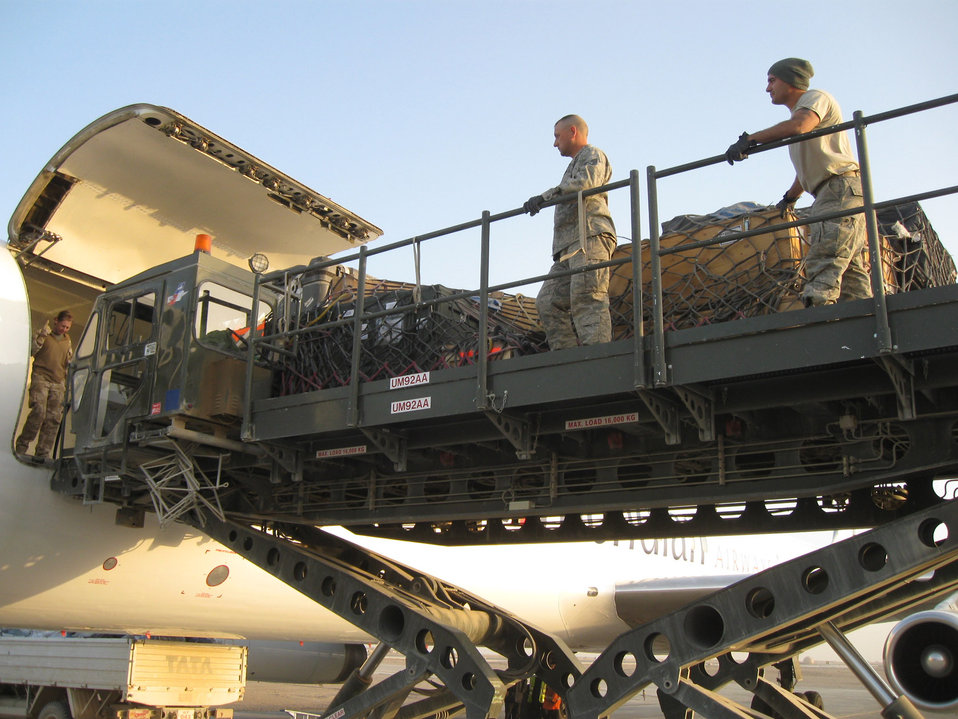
Airmen sustain increased airlift flow to Afghanistan

Tech. Sgt. Robert Brown and Airman 1st Class Seth Nobrega prepare cargo for loading aboard an aircraft March 12, 2010, at Camp Bastion, Afghanistan. Sergeant Brown and Airman Nobrega are assigned to the 570th Global Mobility Squadron.